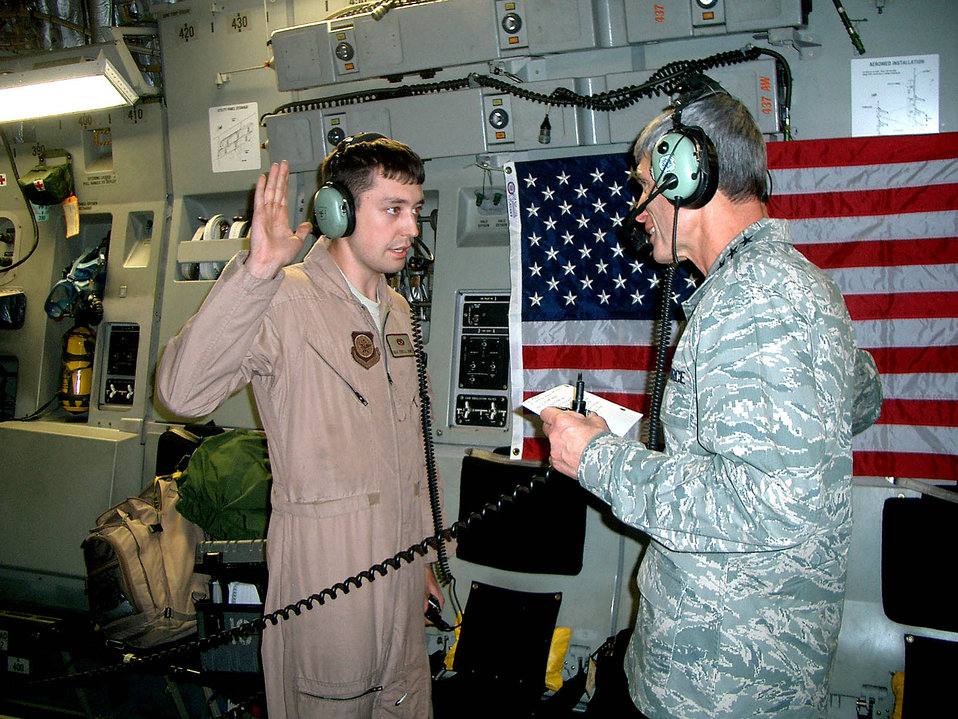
Chief of staff reenlists maintainer over Southwest Asia

Air Force Chief of Staff Gen. Norton A. Schwartz reenlists Senior Airman Tyrell Haney Oct. 23 in a ceremony aboard a C-17 Globemaster III cruising above the U.S. Central Command area of operations. Airman Haney is a 437th Aircraft Maintenance Squadron crew chief from Charleston Air Force Base, S.C.